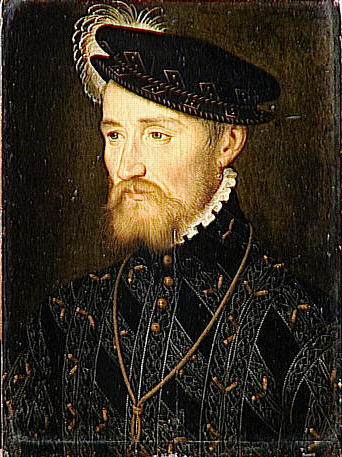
Clouet F de Lorraine